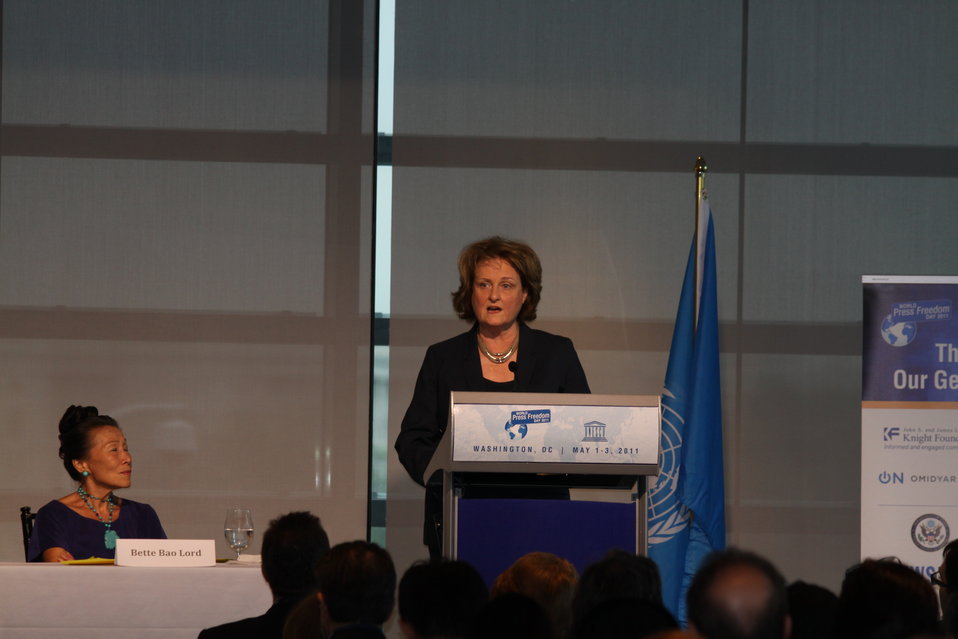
Under Secretary McHale Delivers Remarks on Press Freedom

Under Secretary of State for Public Affairs and Public Diplomacy Judith McHale delivers the opening remarks on Press Freedom at the Newseum in Washington, D.C., on May 1, 2011.